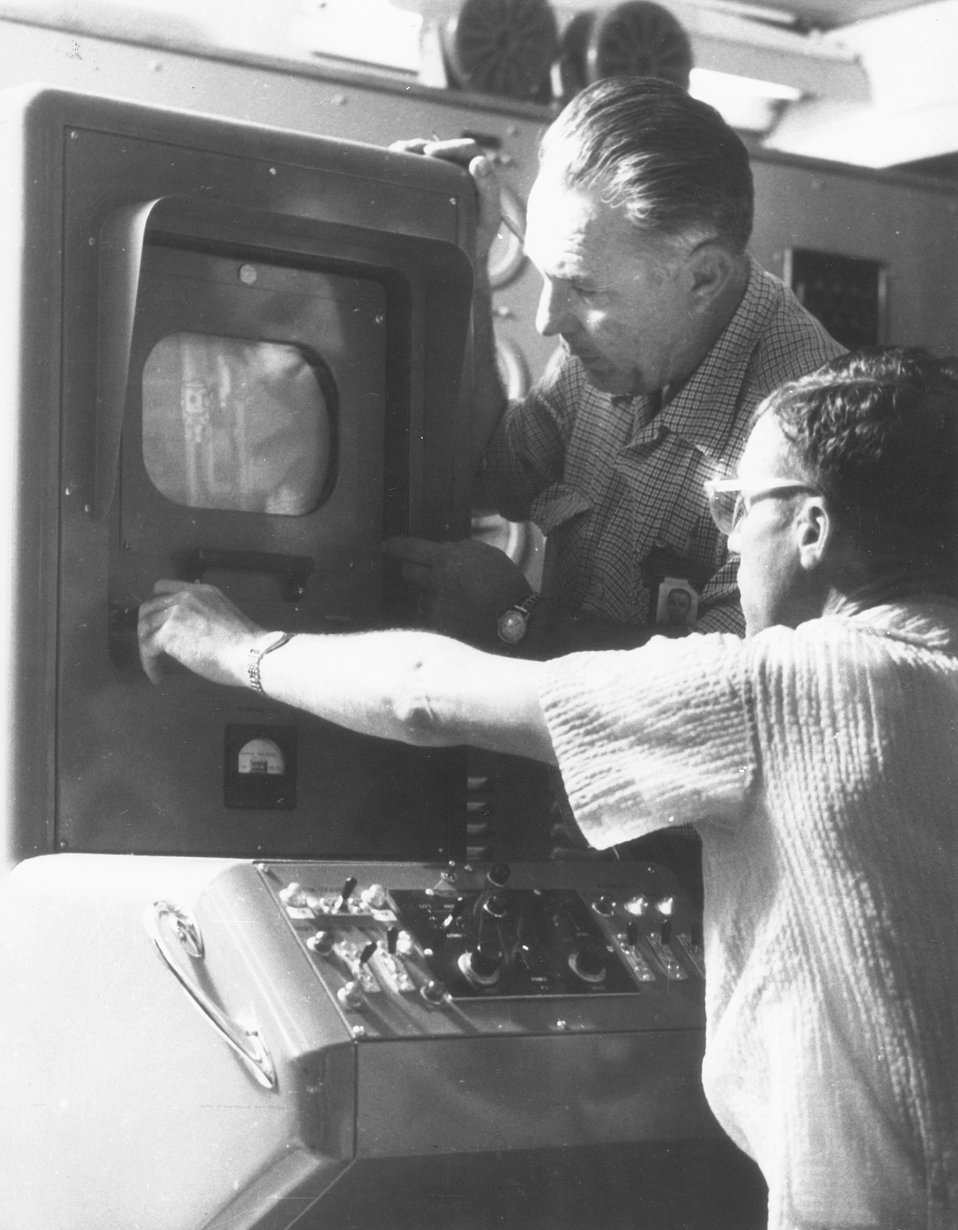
Safely shielded from radiation, two General Electric engineers in a reactor control room at the Hanford atomic plant examine a television screen's image during a routine check of reactor equipment located in a highly radioactive area of the plant. c. 1957